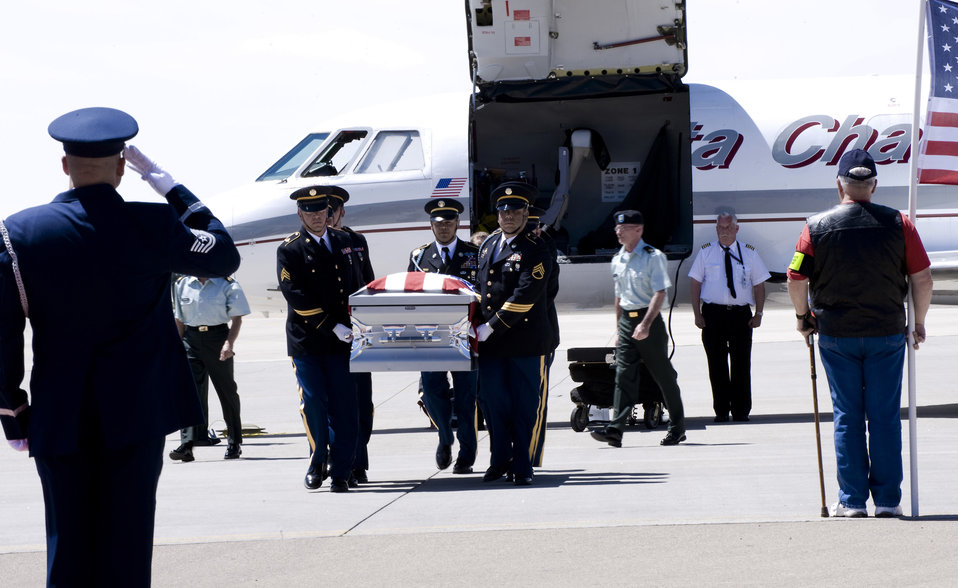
Holloman Airmen honor fallen Soldier

Members of the Patriot Guard Riders and Holloman Air Force Base honor guard pay their respects to the casket of Army Spec. Christopher M. Kurth as he is brought back June 11 for a burial in Alamogordo, N.M. The Soldier was killed in a grenade attack June 4 near Kirkuk, Iraq. Specialist Kurth was a native of Alamogordo, N.M., and was stationed at Fort Hood, Texas.